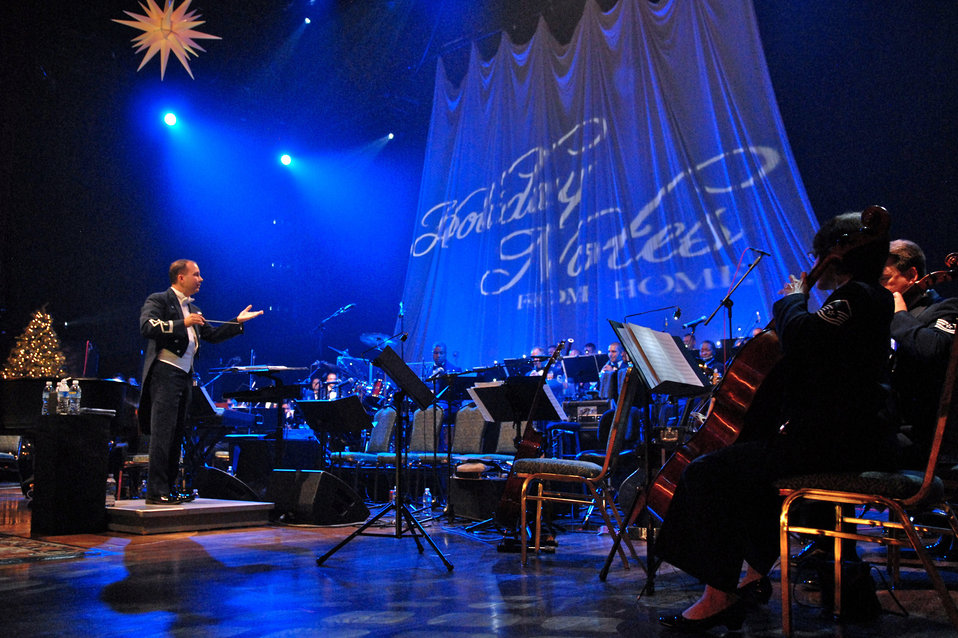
Wynonna Judd joins Reserve Band for TV broadcast

Major Don Schofield leads more than 60 musicians from the Band of the Air Force Reserve and Air Force Strings during the 2008 Holiday Notes from Home concert recorded Dec. 9 in Nashville, Tenn. The concert is an annual holiday event recorded at the Grand Ole Opry House as a tribute to military men and women serving around the world. The show airs on Great American Country and on American Forces Network channels throughout December. Major Schofield is the Band of the Air Force Reserve commander.